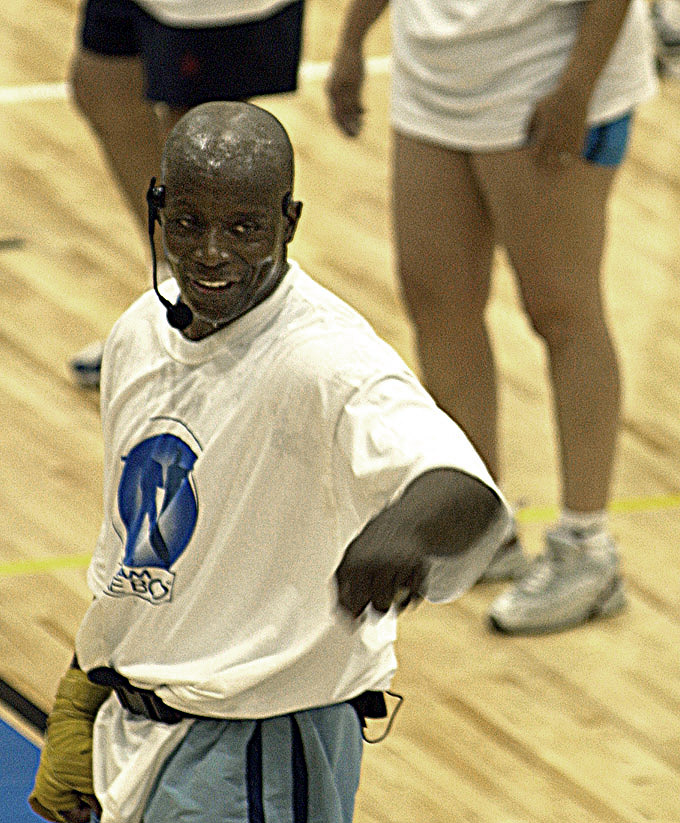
In shape with Billy Blanks

LANGLEY AIR FORCE BASE, Va. -- Tae Bo creator Billy Blanks stretches out with a gym full of students on opening night of Langley's new fitness center Nov. 7. Blanks led the class of more than 500 in his unique mix of dance, aerobic and Tae Kwon Do moves.